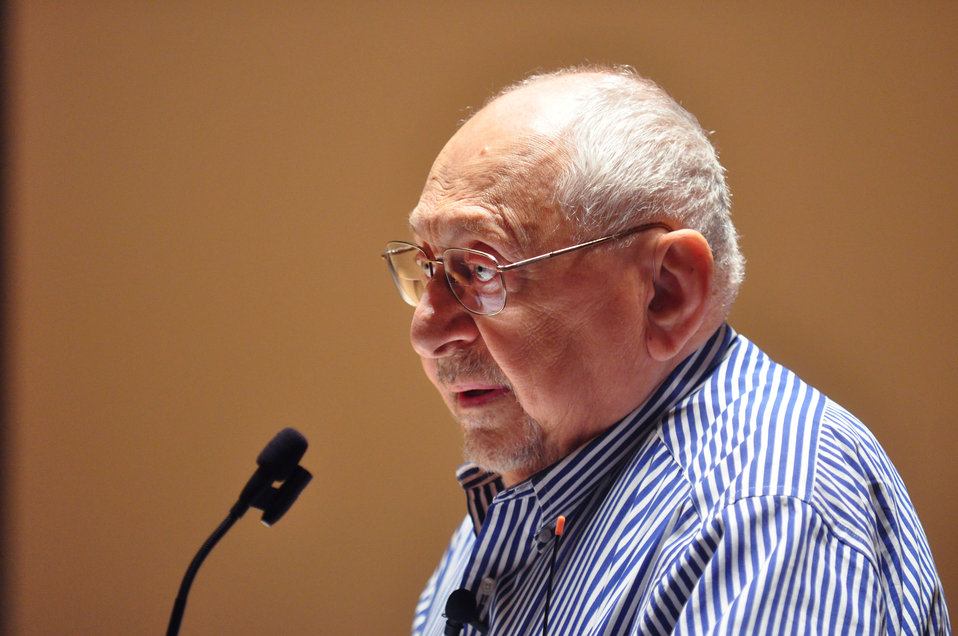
Holocaust Remembrance Program FEW Arthur Pais at AMSE in Oak Ridge

13-096 DOE photo Lynn Freeny 8-8-2013 Oak Ridge Tennessee